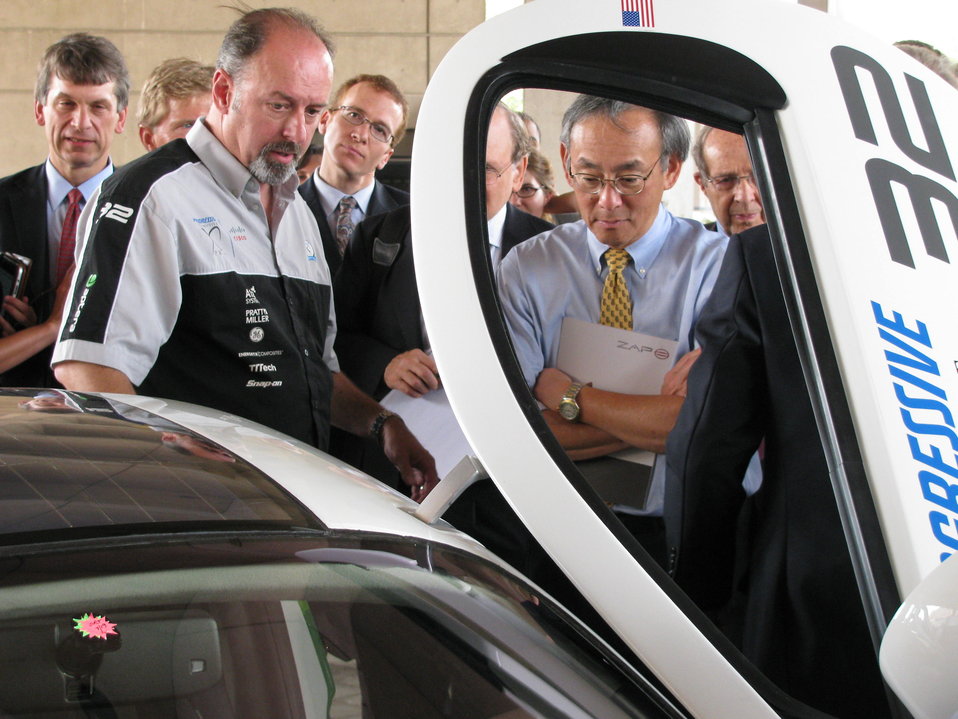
X Prize 029